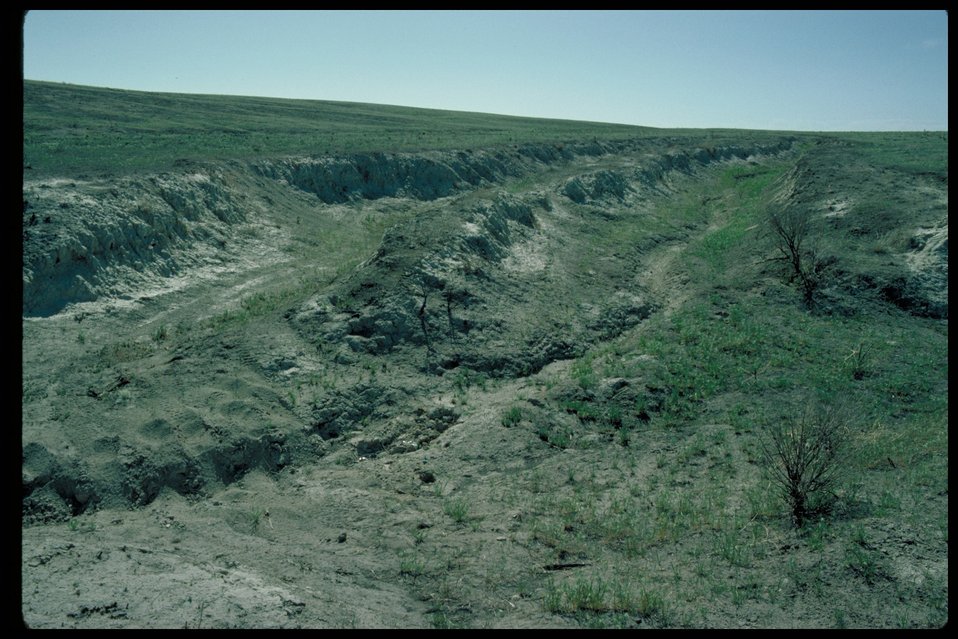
Oregon Trail Near Cove Recreation Site Lower Snake River District